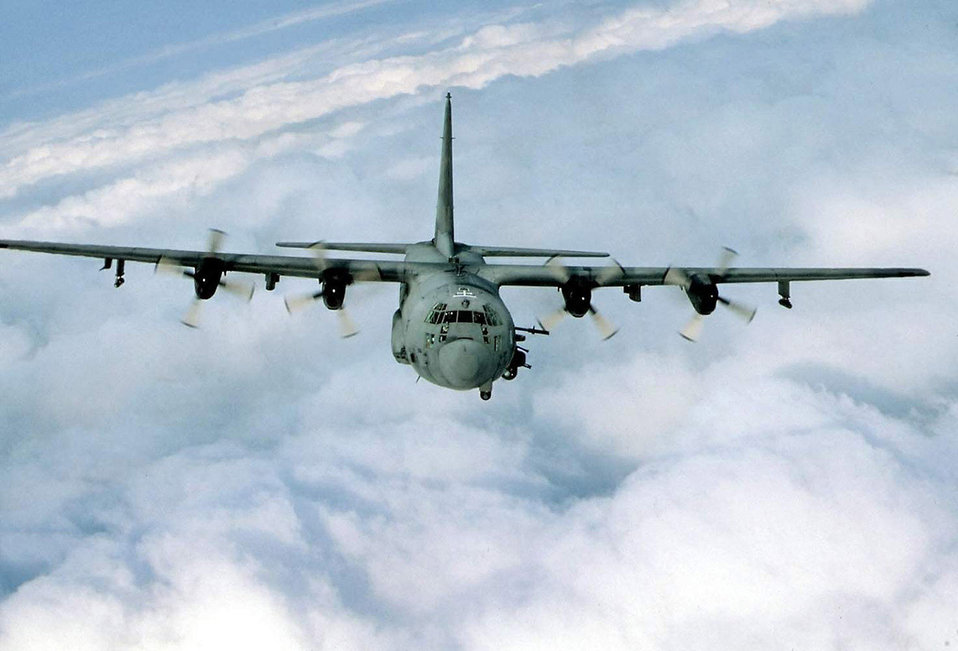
AC-130 Gunship

The AC-130 gunship's primary missions are close air support, air interdiction and force protection. Missions in close air support are troops in contact, convoy escort and urban operations. Air interdiction missions are conducted against preplanned targets or targets of opportunity. Force protection missions include air base defense and facilities defense.